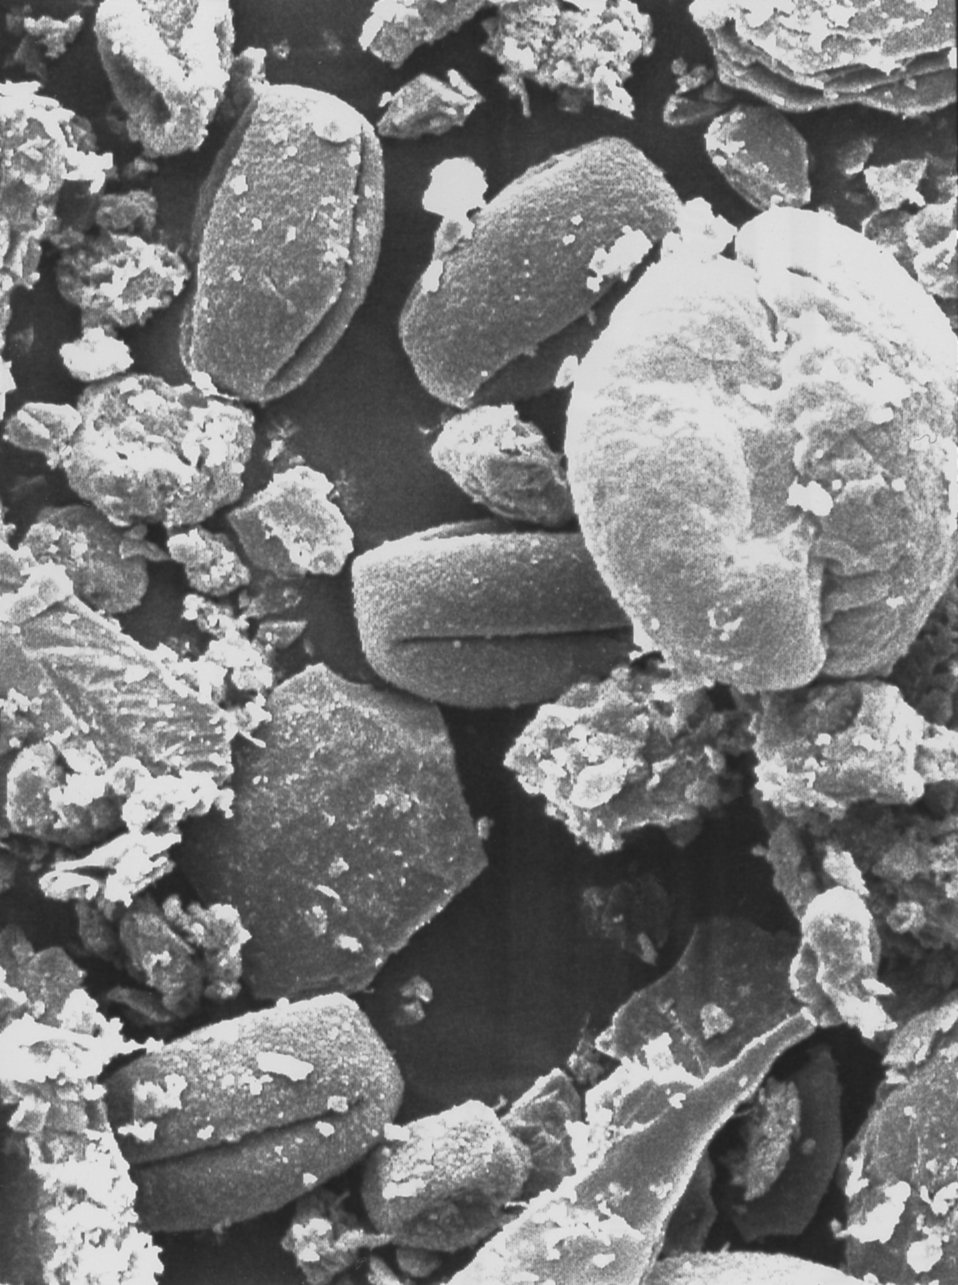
This electron micrograph depicts a morphologic array of pollen granules found on the CDC campus in Atlanta, GA, in spring, 2004.